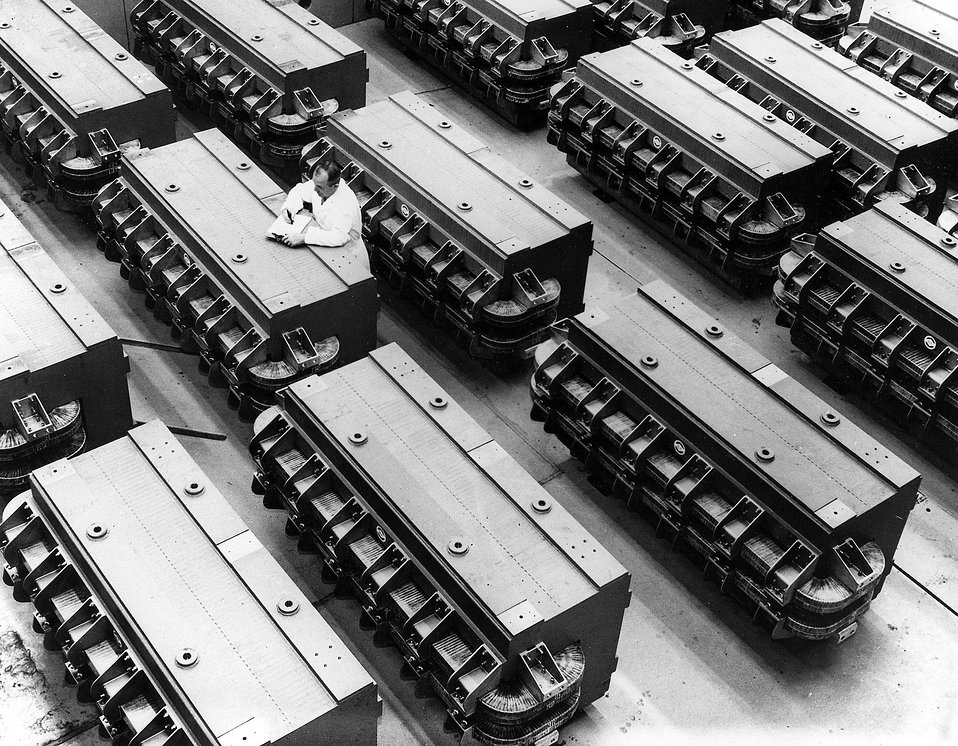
Some of the 240 magnet sections for the Alternating Gradient Synchrotron, assembled in the Target Building for testing, before installation in the 1/2 mile circular tunnel. c. 1960